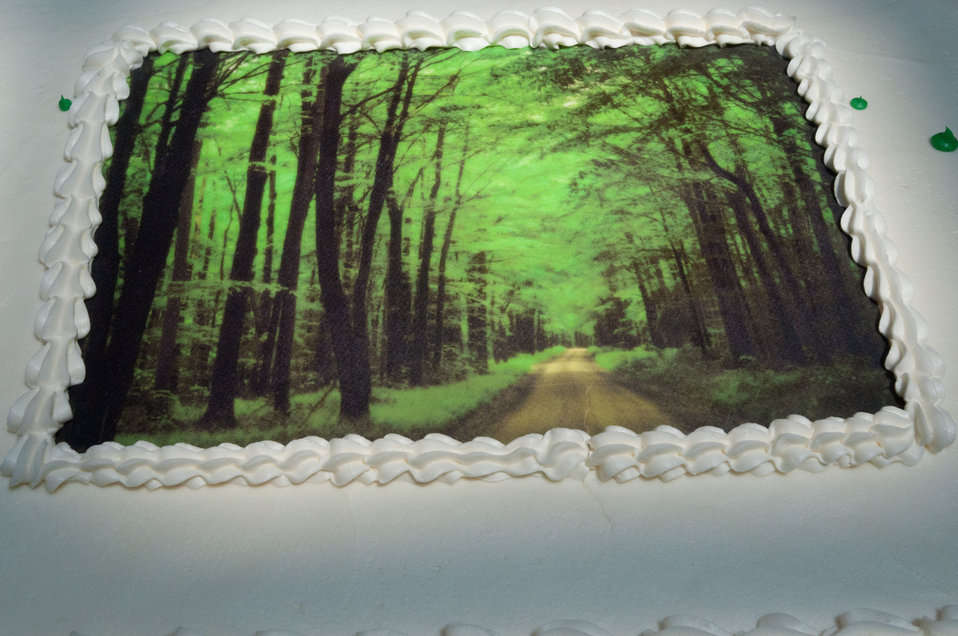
A photo of a forest is featured on a cake at the International Year of Forests (IYOF) celebration on Friday, June 3, 2011 on the Patio of the Whitten Building, U.S.Department of Agriculture in Washington, DC.